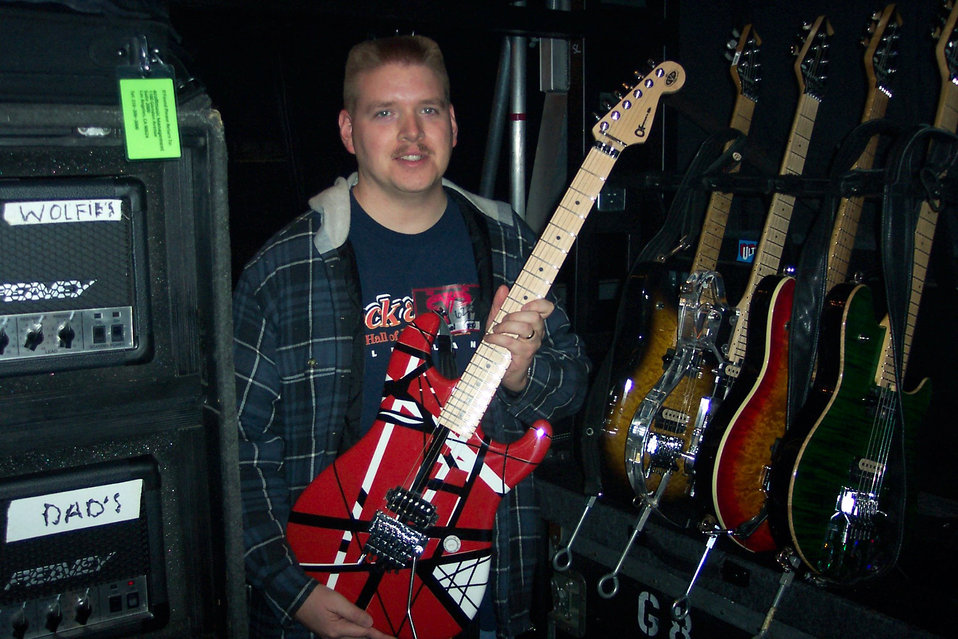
Airman plays roadie for rock 'n' roll legends

SPOKANE, Wash. (AFPN) - Handling Eddie Van Halen's guitar was just one of the benefits Staff Sgt. Scott Viers enjoyed after winning a local radio station contest. Sergeant Viers won a spot as road crew member for the legendary rock 'n' roll band, Van Halen. He is noncommissioned officer in charge of personnel programs for the 93rd Air Refueling Squadron at nearby Fairchild Air Force Base.